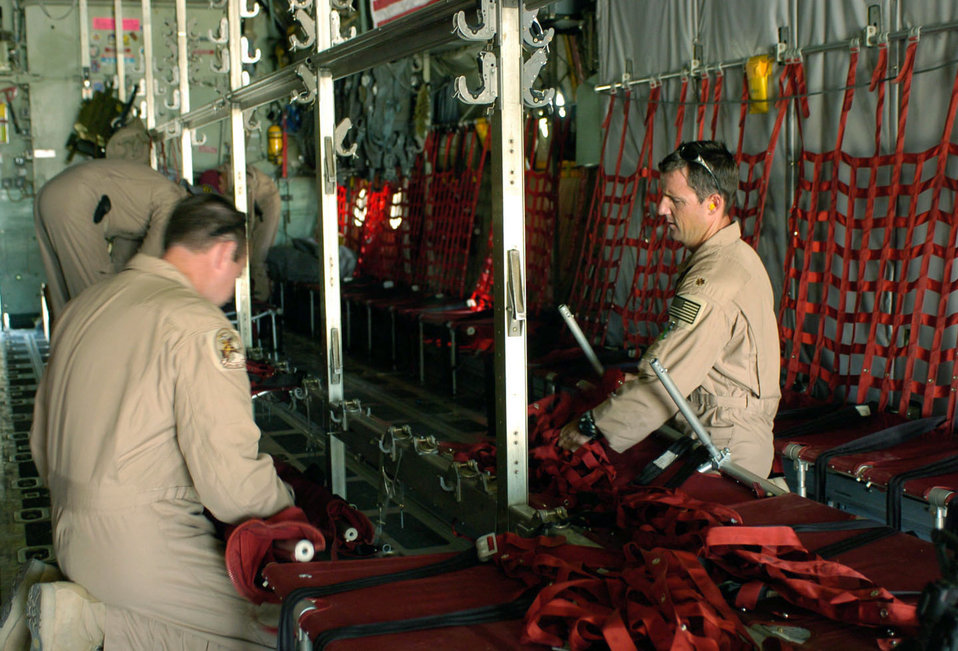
Afghan support

KABUL, Afghanistan -- Maj. Mitch McDonald (right) and his crew reconfigure their aircraft's cargo deck before moving Afghan soldiers Aug. 15 from Kabul International Airport to Shindand National Airport. The Oklahoma Air National Guard aircraft and crew helped move 440 soldiers, 29 U.S. embedded training team advisers and eight Afghan interpreters from here to Shindand to retake control of government property seized as a result of factional fighting in the area. Major McDonald is a C-130 Hercules aircraft commander.